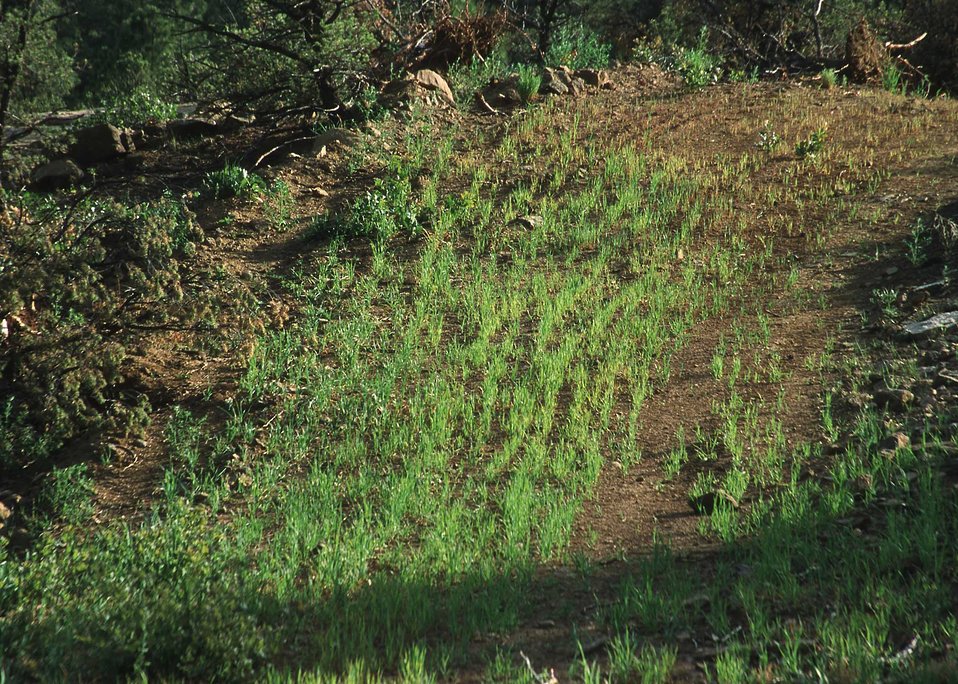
Seeded Access Road near Spanish Peaks, CO.